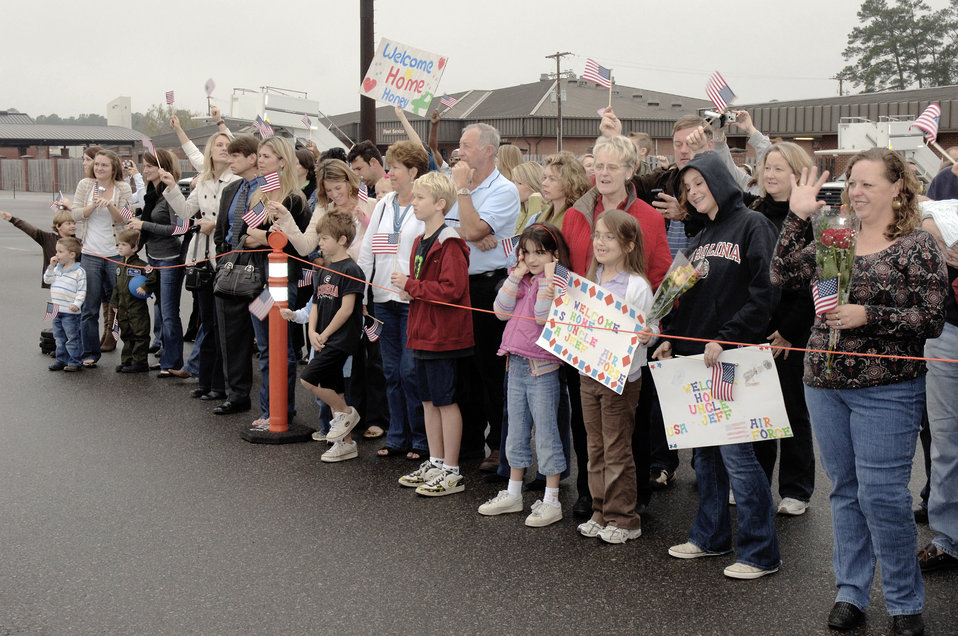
Charleston Airmen return from war

Family members cheer as they wait for the return of their loved ones from a deployment Jan. 3 at Charleston Air Force Base, S.C. More than a 130 Airmen from the 15th Airlift Squadron returned from their 120-day deployment in Southwest Asia.